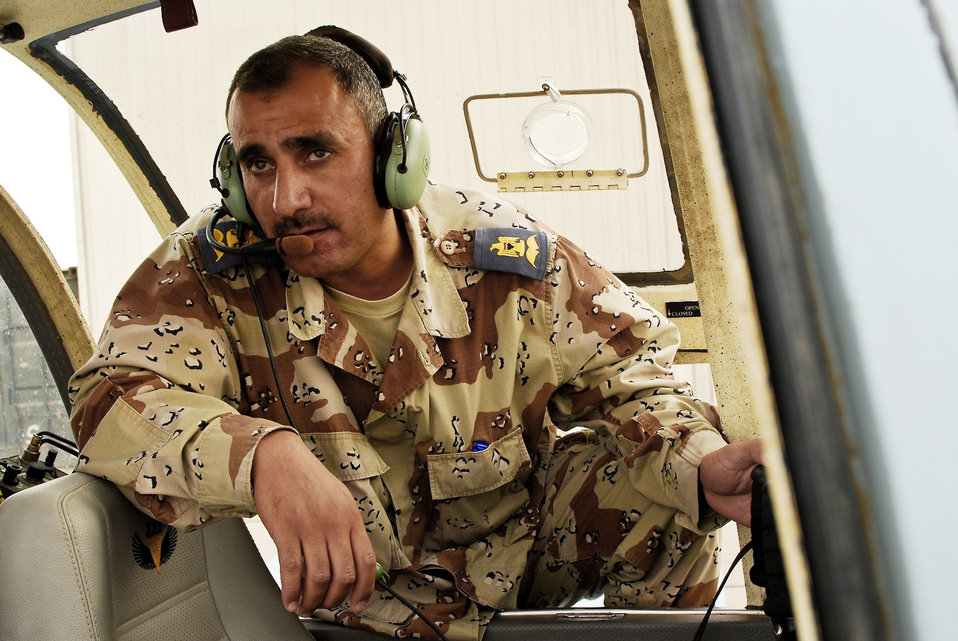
Airmen help connect Iraqi army, air force

An Iraqi air force officer listens for a response from the Iraqi army in an effort to enhance communication between the two services Aug. 11 on Contingency Operating Base Basra, Iraq. American Airmen assisted with linking the Iraqi army and air force.